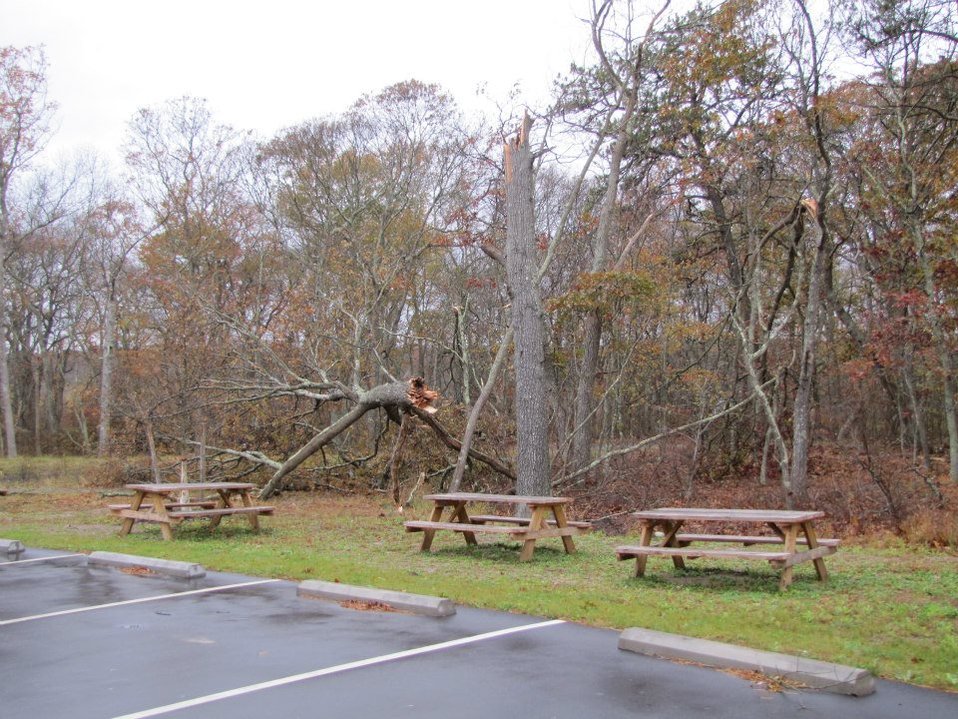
Hurricane damage at Long Island National Wildlife Refuge Complex (NY)

Felled tree in picnic area.